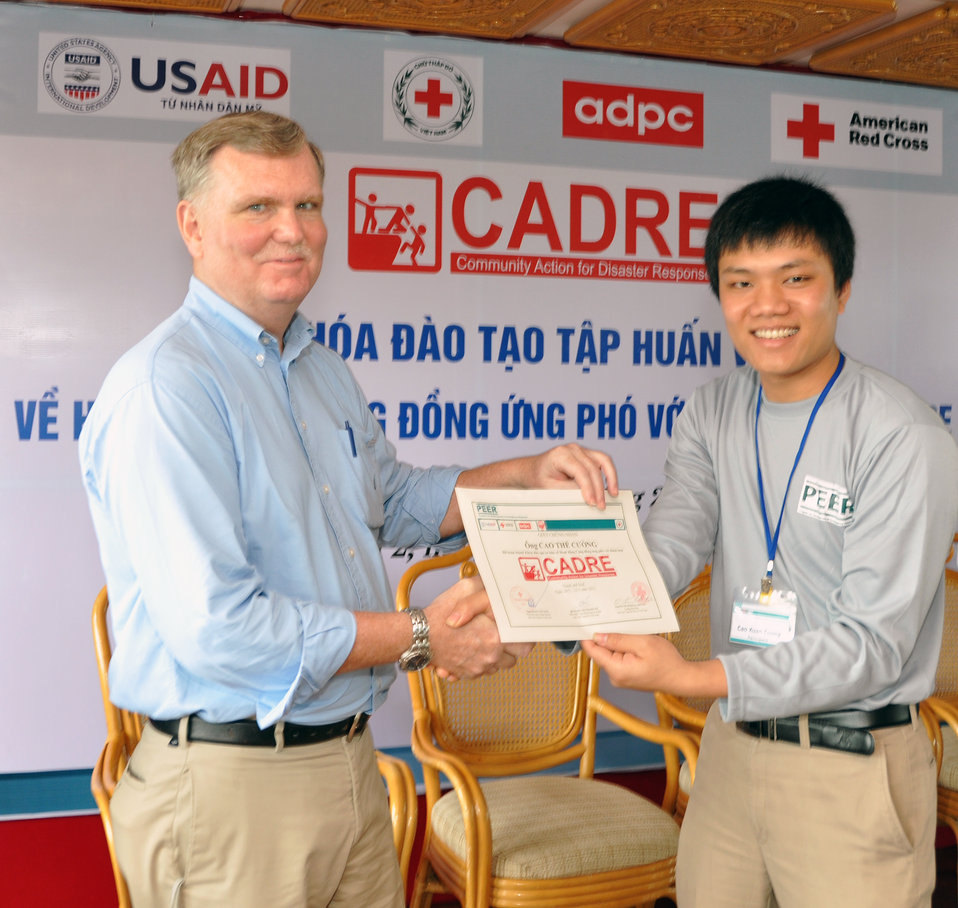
Disaster and Emergency Training Funded by USAID in Hue, Vietnam